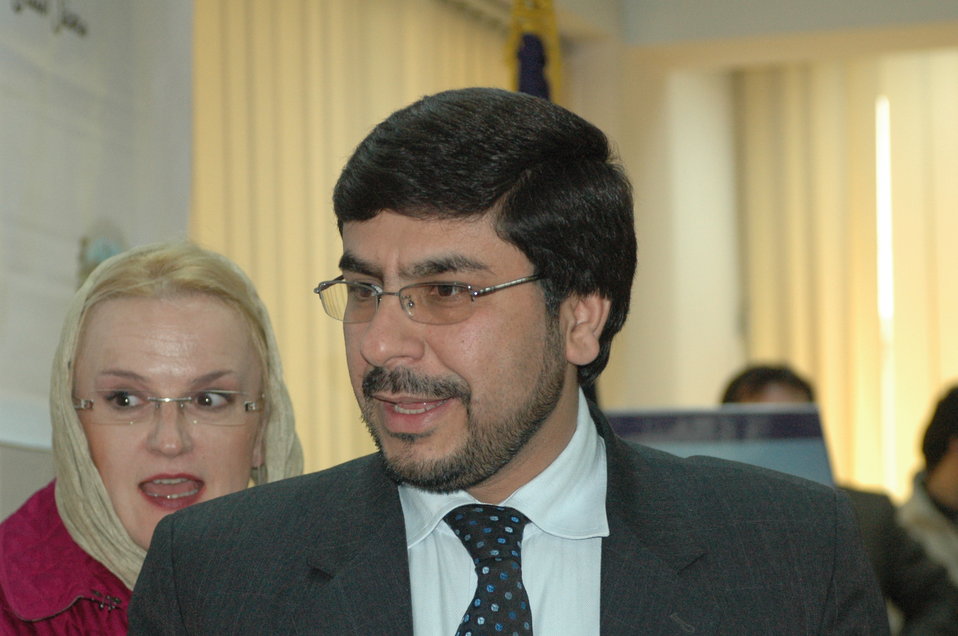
Community Based Stabilization Grants Ceremony, December 7, 2010